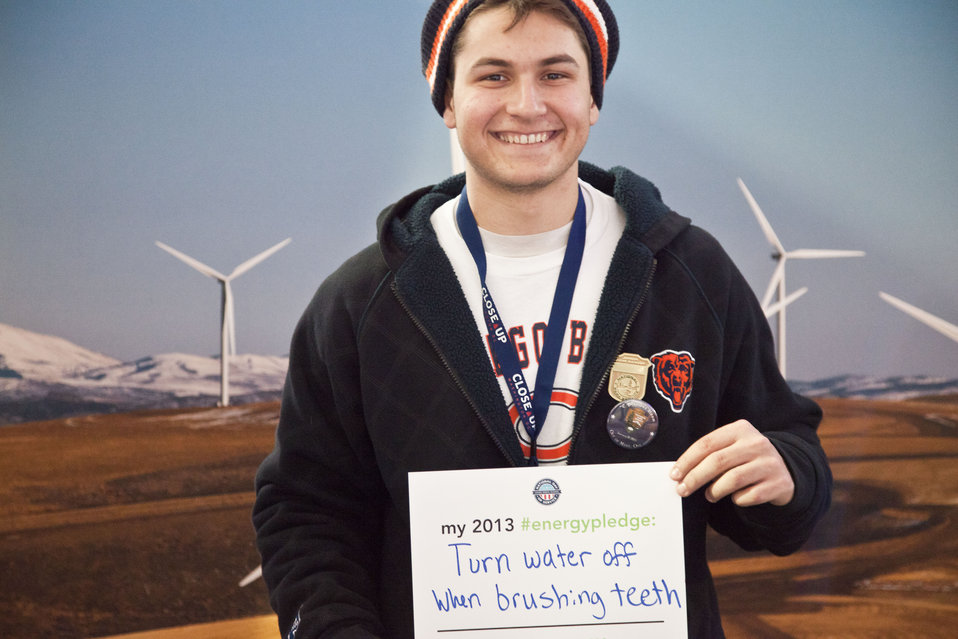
What's your #energypledge?